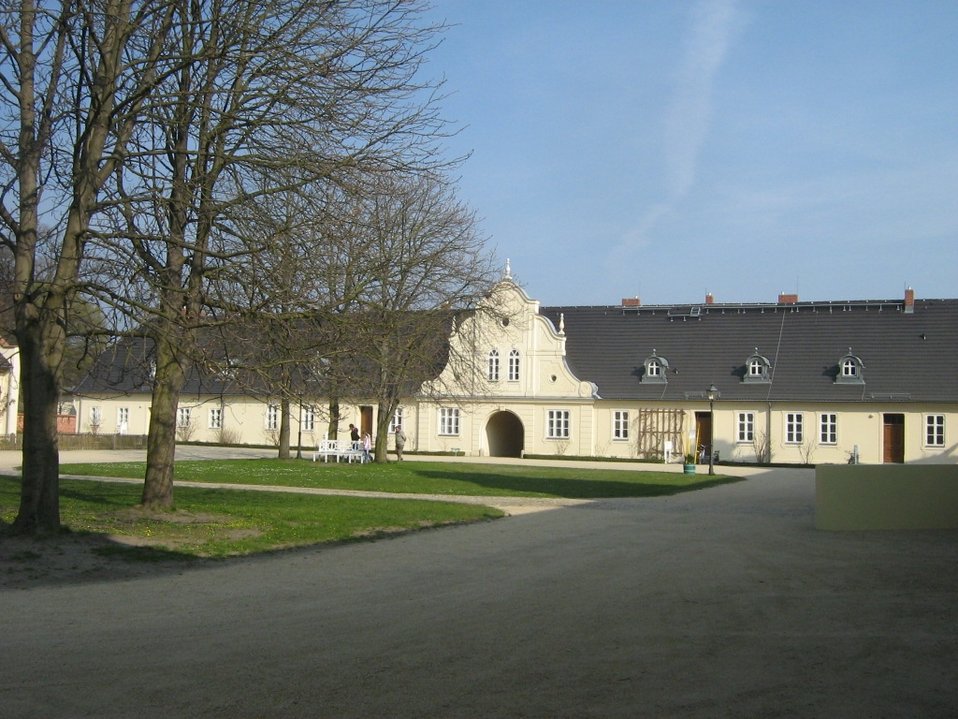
Deutsch: Marstall im Park Muskau (Niederschlesischer Oberlausitzkreis, Sachsen)